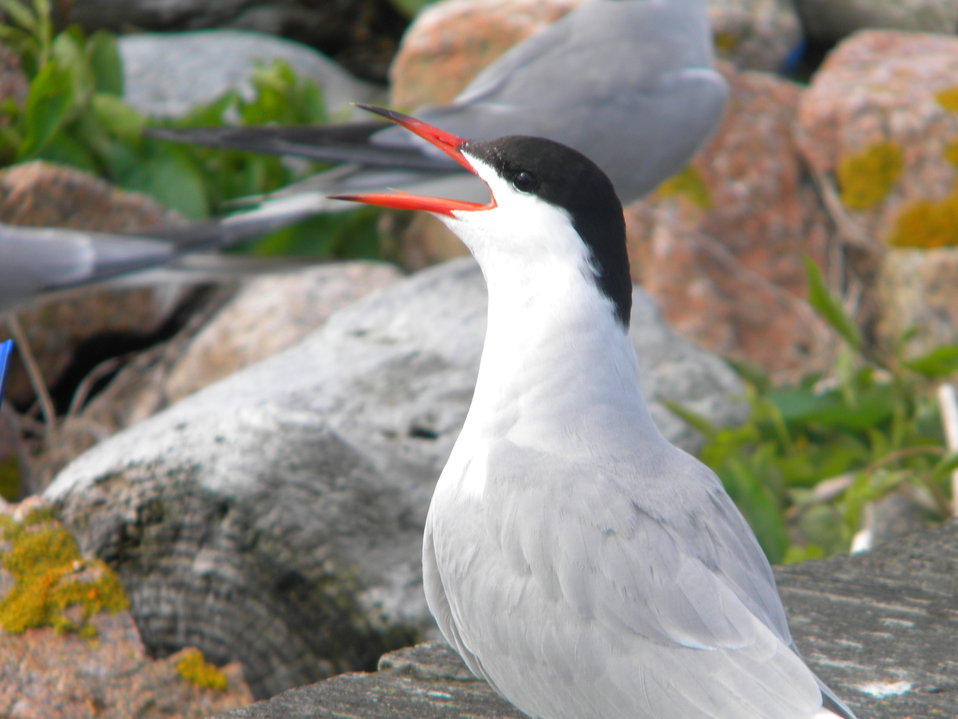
Common tern

Petit Manan Island, Maine Coastal Islands NWR. Summer with the Seabirds blog: mainecoastalislands.wordpress.com/2010/08/01/terns/